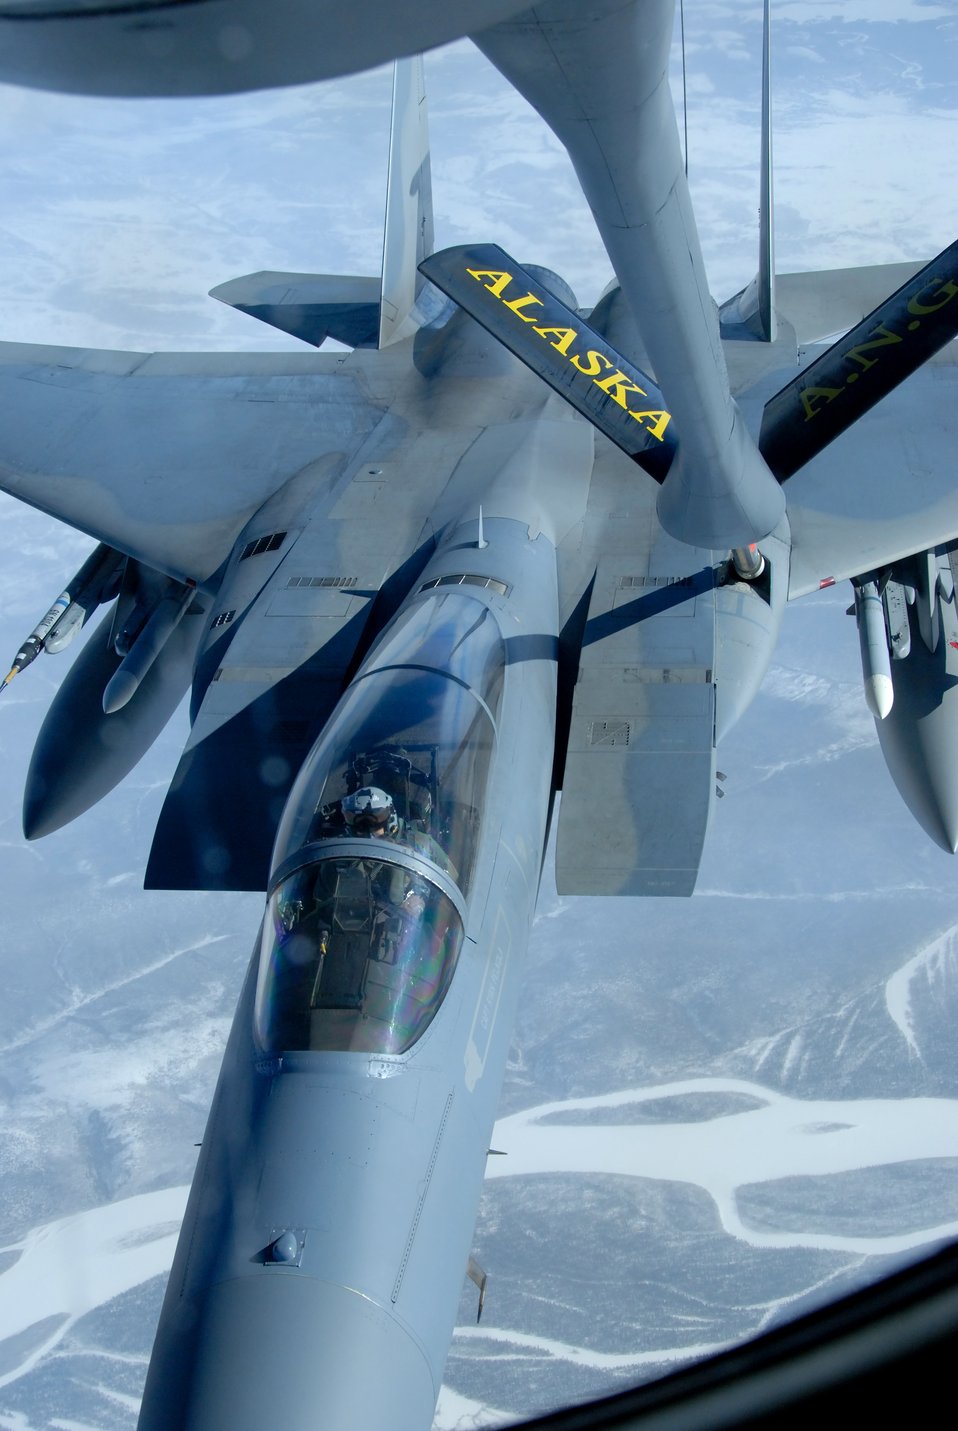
Gas at 20,000 feet

A 12th Fighter Squadron F-15 Eagle from Elmendorf Air Force Base, Alaska, receives fuel from a KC-135 Stratotanker March 26 over the Pacific Alaska Range Complex. Nearly all internal fuel, up to 200,000 pounds, can be pumped through the flying boom, the KC-135's primary fuel transfer method. The KC-135 is from the 168th Air Refueling Squadron at Eielson AFB, Alaska.